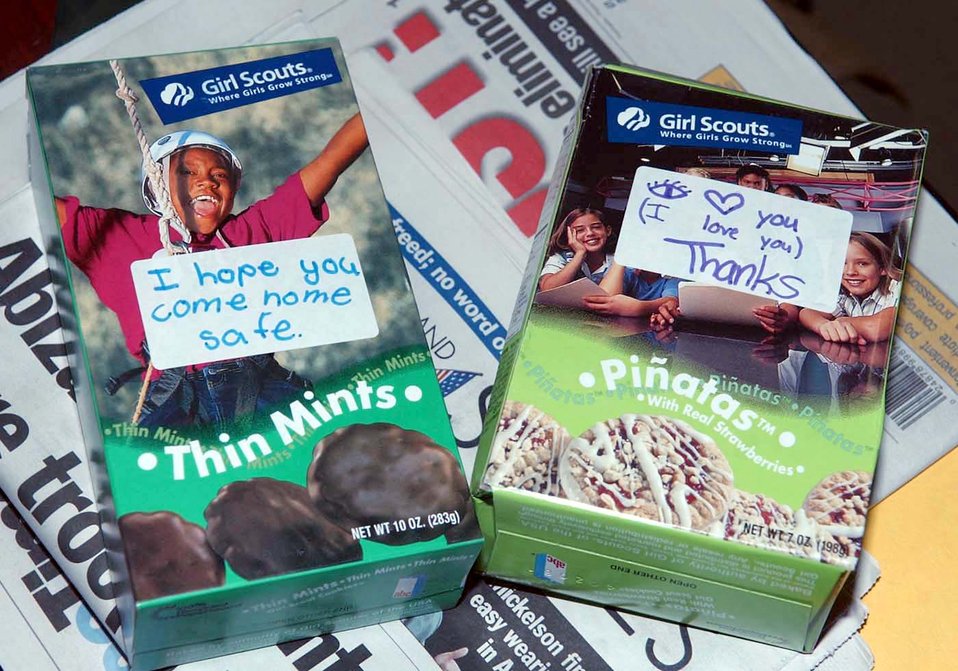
A taste of America

BAGRAM AIR BASE, Afghanistan -- Brownie Troop 2859 from Marlboro, Mass., sent about 150 boxes of Girl Scout cookies to the 455th Expeditionary Operations Group here. Each box had a hand-written note to the Airmen attached.